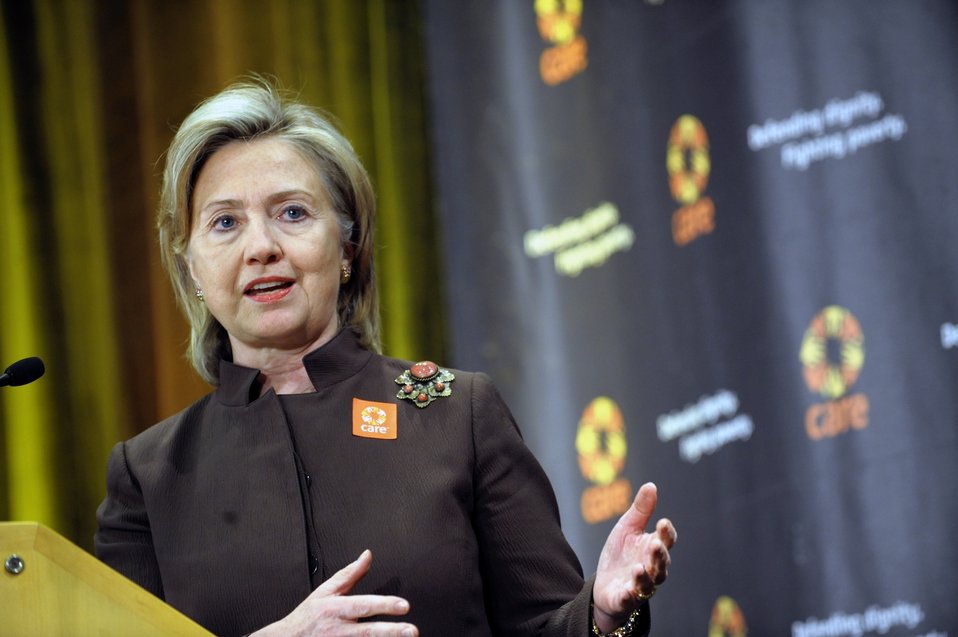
Secretary Clinton Delivers Remarks at CARE National Conference

U.S. Secretary of State Hillary Rodham Clinton delivers remarks to the 2010 CARE National Conference at the Ronald Reagan Building in Washington, D.C., May 11, 2010.